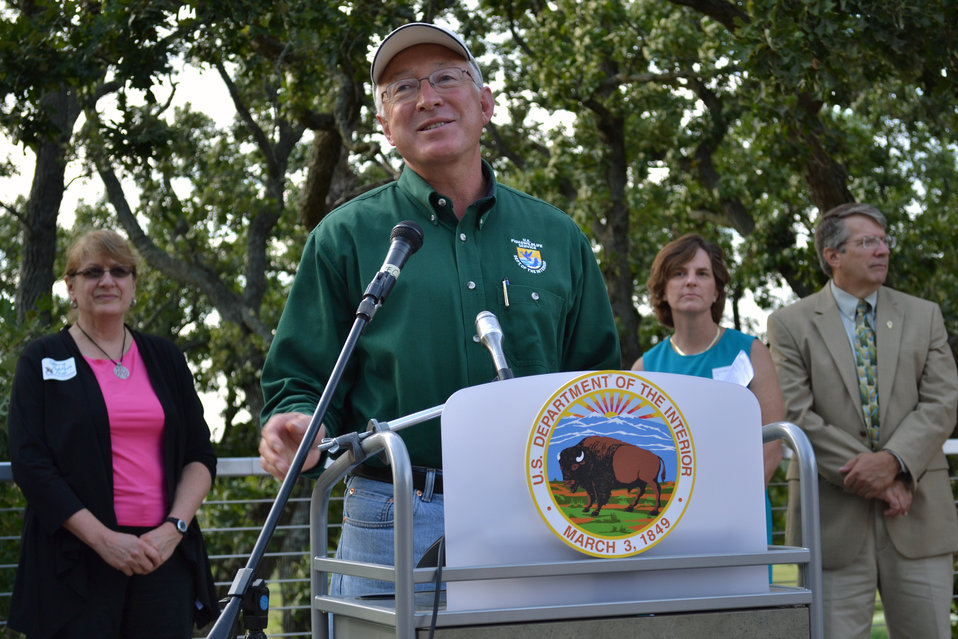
Proud

Secretary of the Interior Ken Salazar announced that he has authorized the establishment of Hackmatack National Wildlife Refuge in southeastern Wisconsin and northeastern Illinois, eventually providing up to 11,200 acres of habitat for wildlife as well as outdoor recreational opportunities within easy driving distance of millions of people.